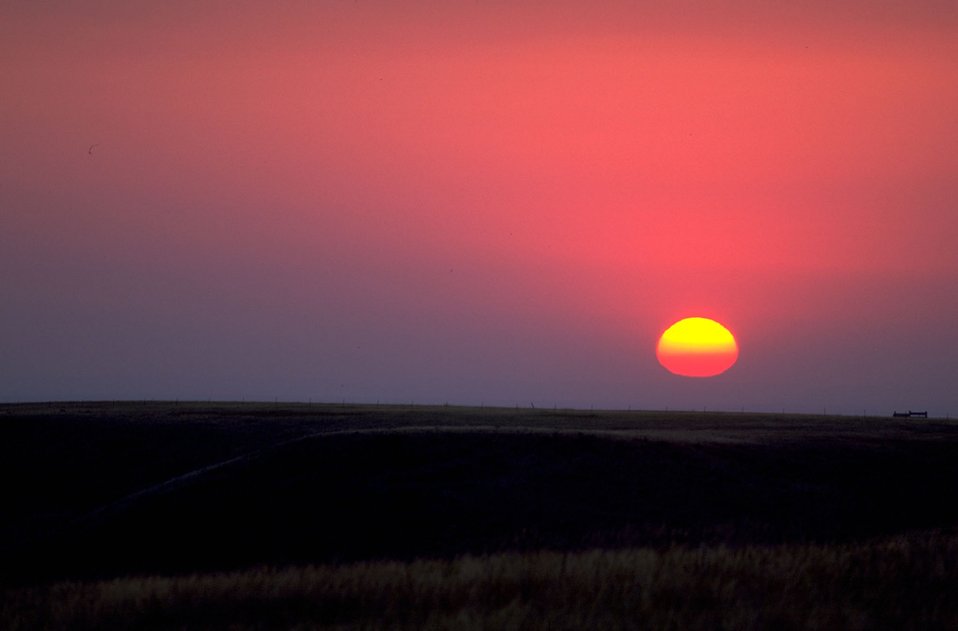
Sunrise at North Ridge, Fort Meade SD